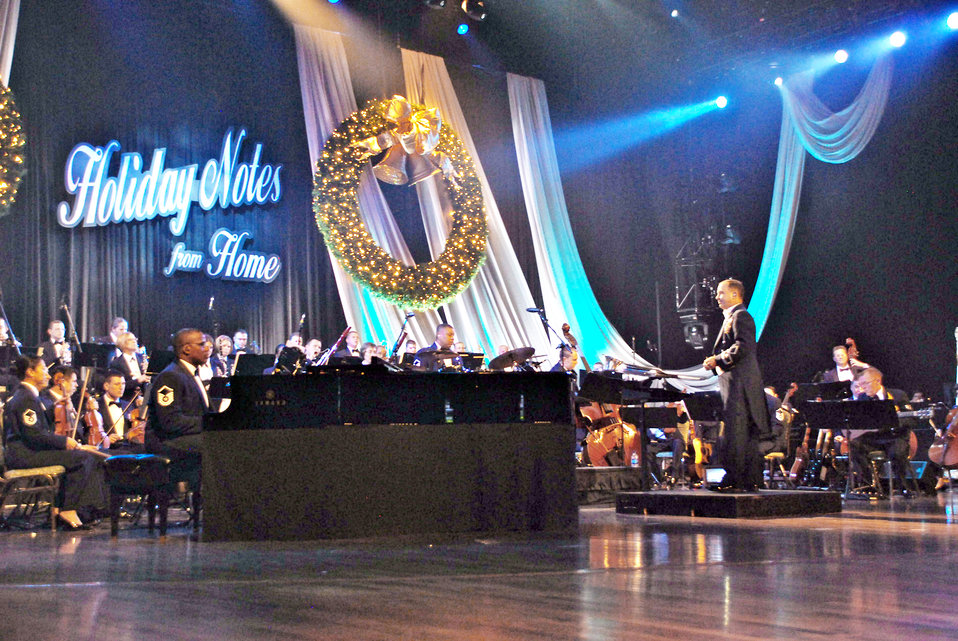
Holiday Notes from Home airs Dec. 23-25

Maj. Donald Schofield leads the 60-member orchestra during the 2009 Holiday Notes from Home taped concert Oct. 26, 2009, at the Grand Ole Opry House in Nashville, Tenn. The annual holiday concert, featuring Amy Grant, Brian McKnight, Take 6, Band of the Air Force Reserve and Air Force Strings ensemble, will broadcast on Gospel Music Channel and American Forces Network. Major Schofield is the Band of the Air Force Reserve commander.